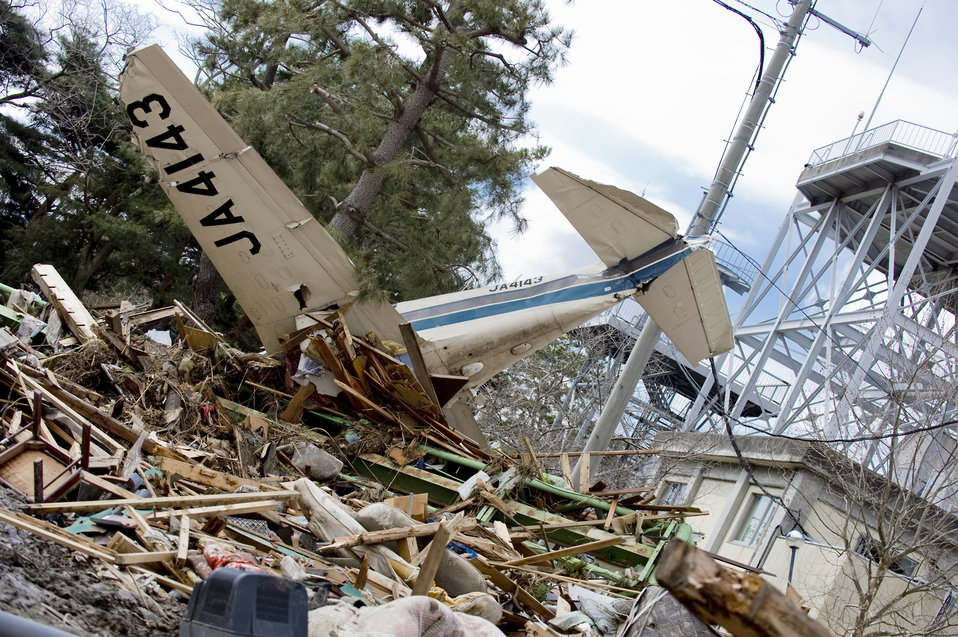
Airmen work with Japanese air controllers

The devastation can still be seen March 26, 2011, around Sendai Airport, Japan, more than two weeks after an earthquake and tsunami ravaged the region.